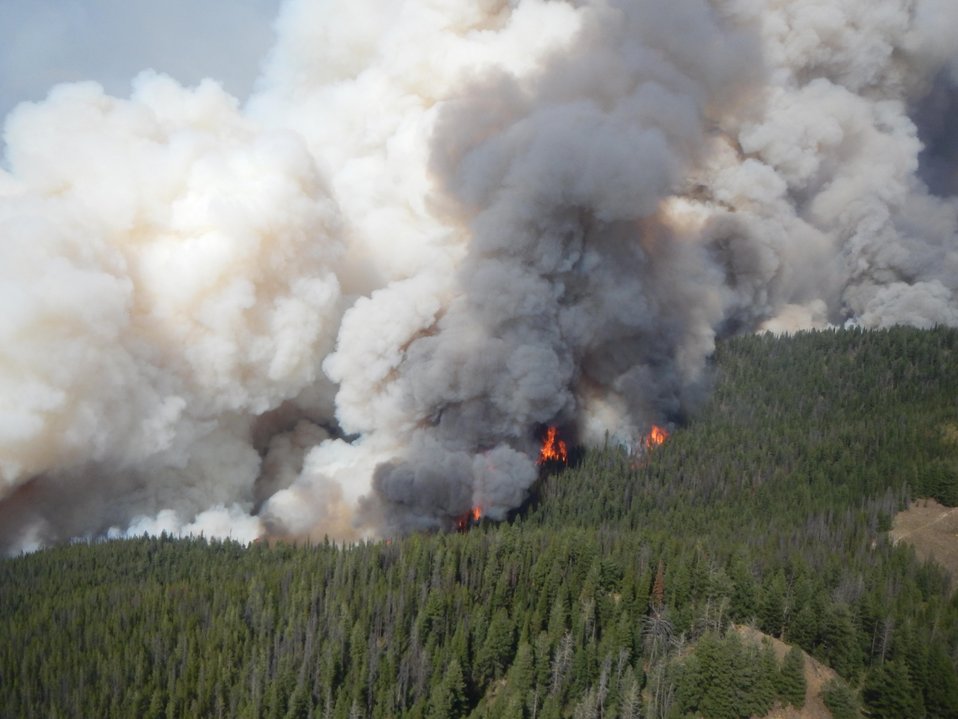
The Gold Pan Fire in the Bitterroot National Forest near Conner, MT began by lightning on Jul. 16, 2013 by lighting have consumed approximately 39,927 acres.